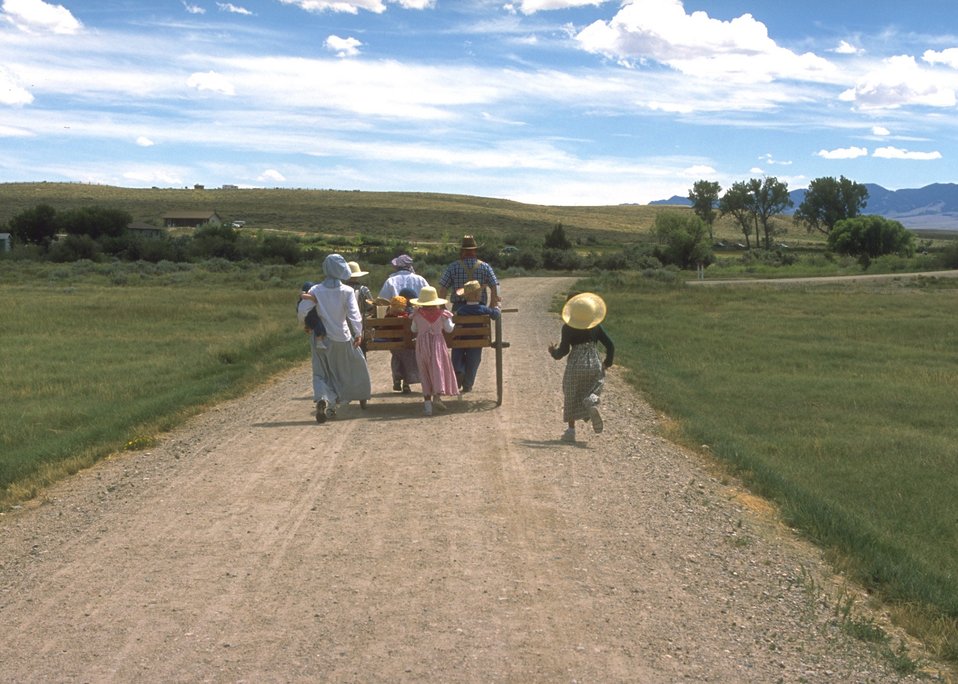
Handcart re-enactment on the Mormon Trail between Devil's Gate and Martin's Cove, Rawlins Field Office.